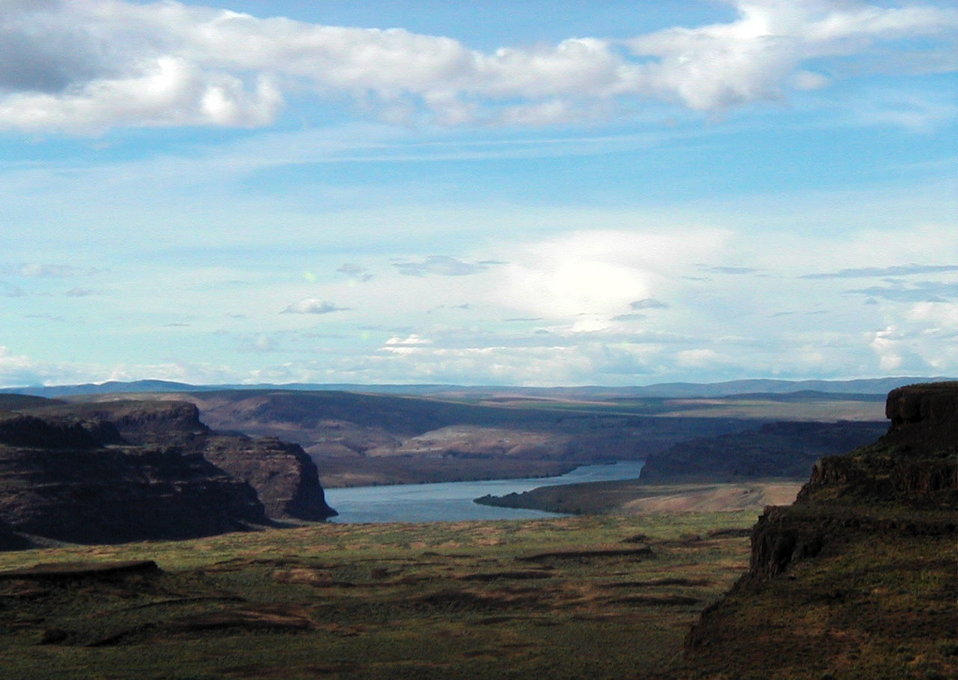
Saturday afternoon at the 2006 Sasquatch Music Festical at the Gorge Amphitheater, in George, Washington. Yes: George, Washington. It was warm and sunny, with only thin, harmless clouds in the sky.